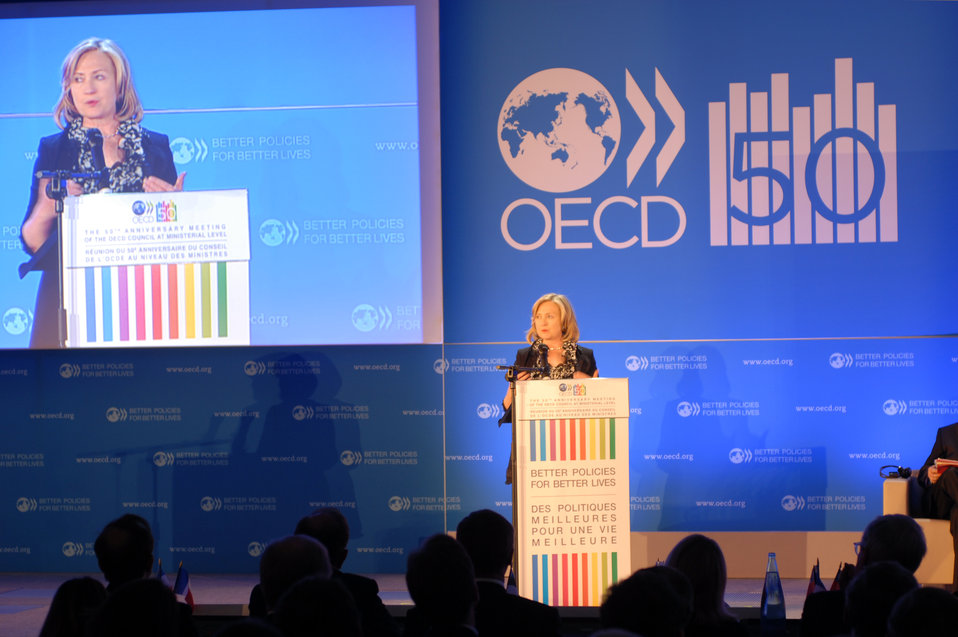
Secretary Clinton Delivers Remarks at the OECD Ministerial Council Meeting and 50th Anniversary Commemoration

U.S. Secretary of State Hillary Rodham Clinton delivers remarks at the Organization for Economic Cooperation and Development (OECD) Ministerial Council Meeting and 50th Anniversary Commemoration, in Paris, France, on May 25, 2011.